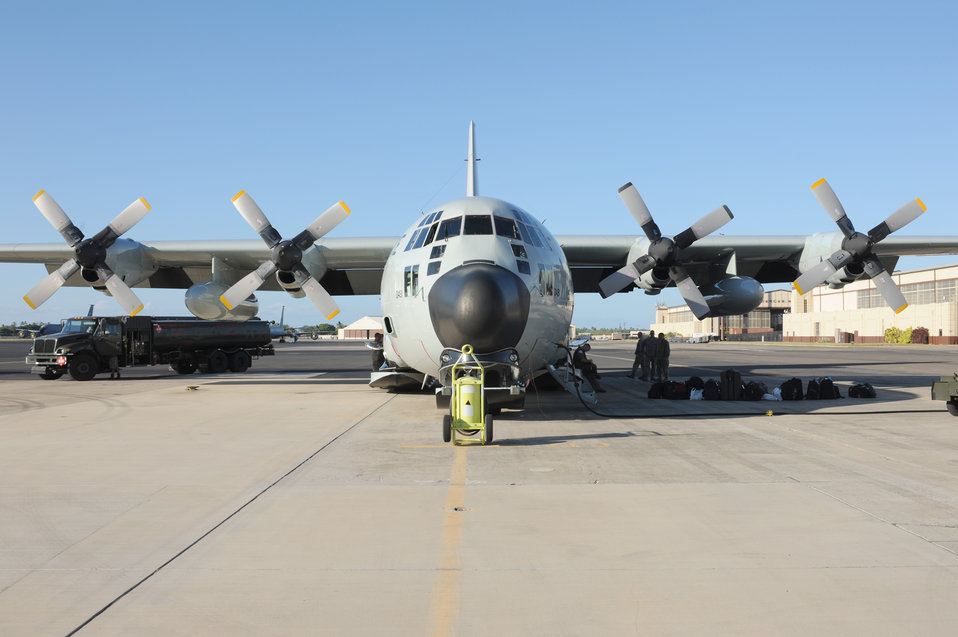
Deep Freeze

An LC-130 Hercules, equipped with retractable ski-wheels, parks on the flightline Oct. 18, 2010, at Joint Base Pearl Harbor-Hickam, Hawaii. The LC-130 is preparing for a flight to Antarctica to support Operation Deep Freeze. The uniquely-equipped aircraft is necessary for the movement of people and cargo vital to the U.S. Antarctic Program and the National Science Foundation's research and exploration efforts in Antarctica as part of Operation Deep Freeze.